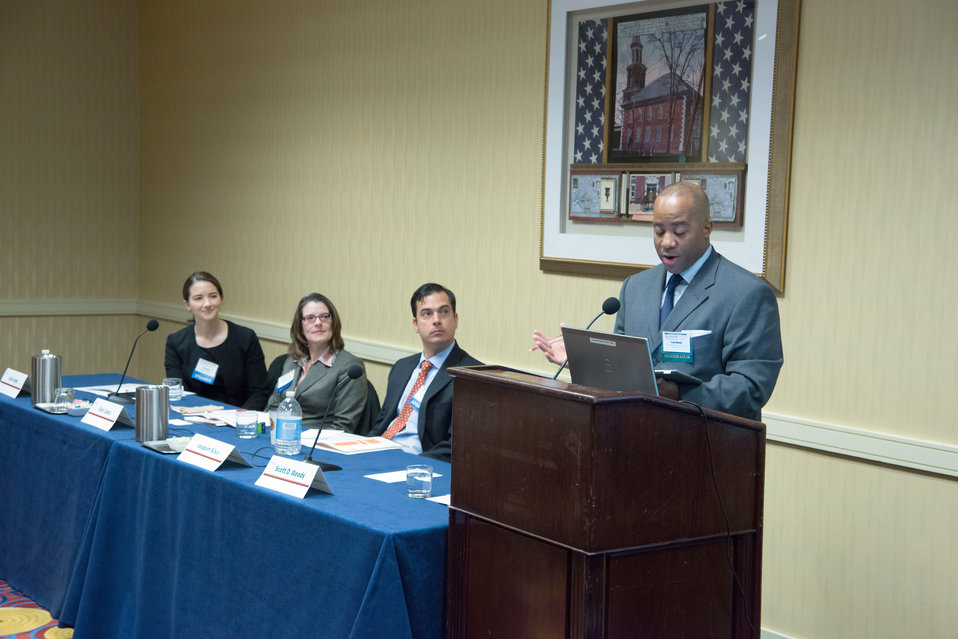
U.S. Department of Commerce National Telecommunications and Information Administration Broadband Technology Opportunities Program Communications Program Specialist Scott D. Woods moderates the plenary panel on Strengthening Rural Communities at the 2014 Agricultural Outlook Forum on Friday, Feb. 21, 2014 in Arlington, VA. The panel discussed finding ways to create opportunities and deliver resources to strengthen rural economies. The session demonstrated how technology is used to help farmers improve crop yield, conserve water, use monitoring to leverage markets, and provide access to health care and social services. (L to R U.S. Department of Health and Human Services (HHS) Office of the National Coordinator Rural Health Information Technology Coordinator Leila Samy, Veterans Health Administration Office of Rural Health Director Gina Capra, TerraVu Chief Executive Officer Joaquin Silva, and U.S. Department of Commerce National Telecommunications and Information Administration Broadband Technology Opportunities Program Communications Program Specialist Scott D. Woods). The U.S. Department of Agriculture’s (USDA) annual Agricultural Outlook Forum brings together the agricultural community to discuss policy, trade, science, rural development, and the economic outlook for the coming year. The Forum also focuses on forestry, health and nutrition issues, and the changing dynamics and face of rural America.